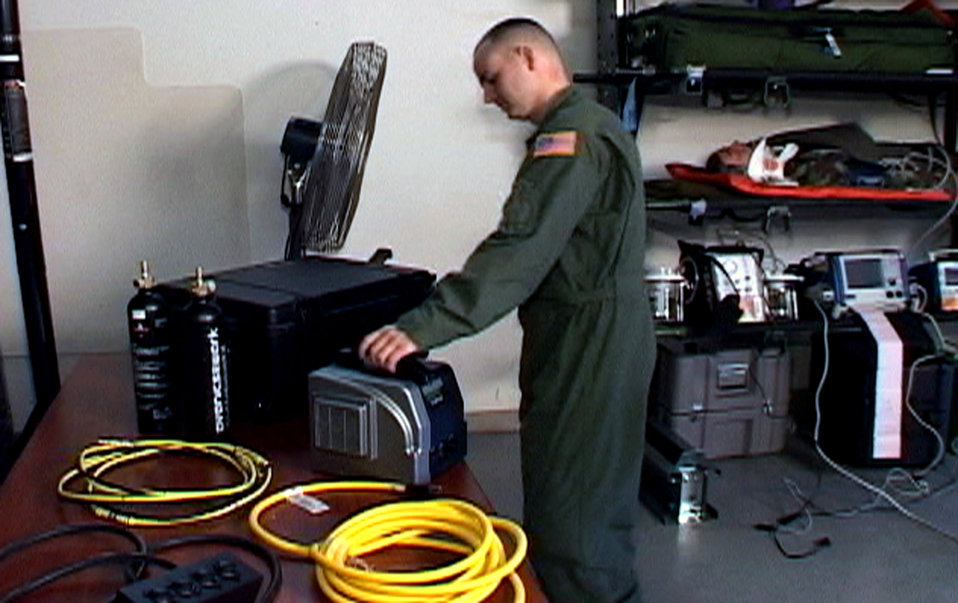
Portable electronic power initiative energizes possibilities

An Air Force medical technician from the 375th Aeromedical Evacuation Squadron, Scott Air Force Base, Ill., prepares the Jadoo portable electronic power system for use with aeromedical power equipment as part of an Air Mobility Battlelab demonstration at Scott in February 2008. The demonstration was for the battlelab's Portable A 375th Aeromedical Evacuation Squadron medical technician prepares the Jadoo portable electronic power system for use with aeromedical power equipment as part of an Air Mobility Battlelab demonstration in February at Scott Air Force Base, Ill. The demonstration was for the battlelab's Portable Electronic Power Supply for Aeromedical Evacuations initiative. The demonstration proved successful and the Air Mobility Battlelab, located in the Air Force Expeditionary Center at Fort Dix, N.J., has recommended it to Air Mobility Command for use.